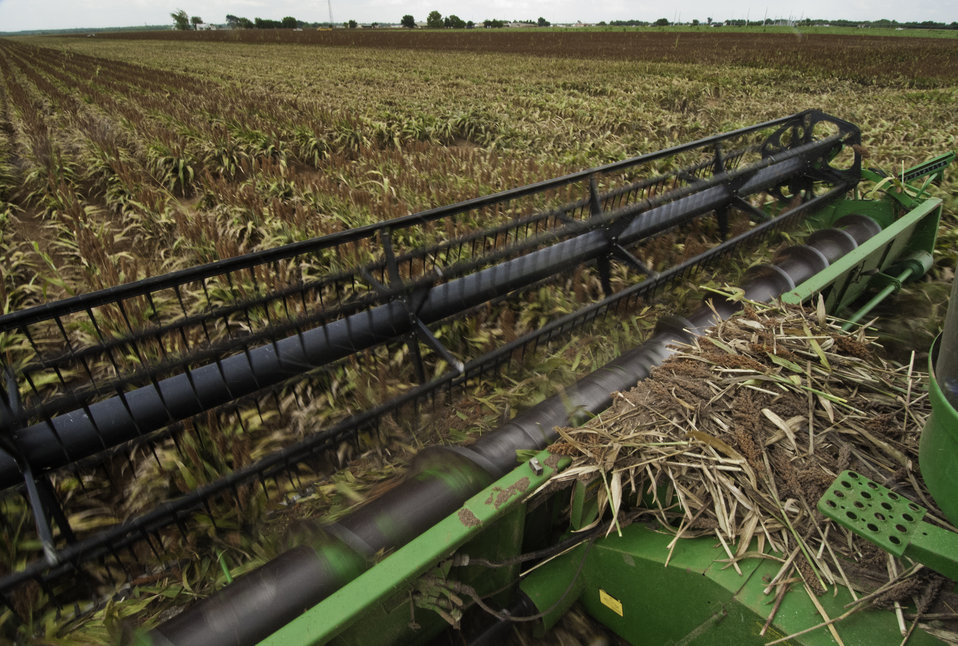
Grain sorghum is harvested on the Wilder Farms in Navasota, TX on Aug. 23, 2013.